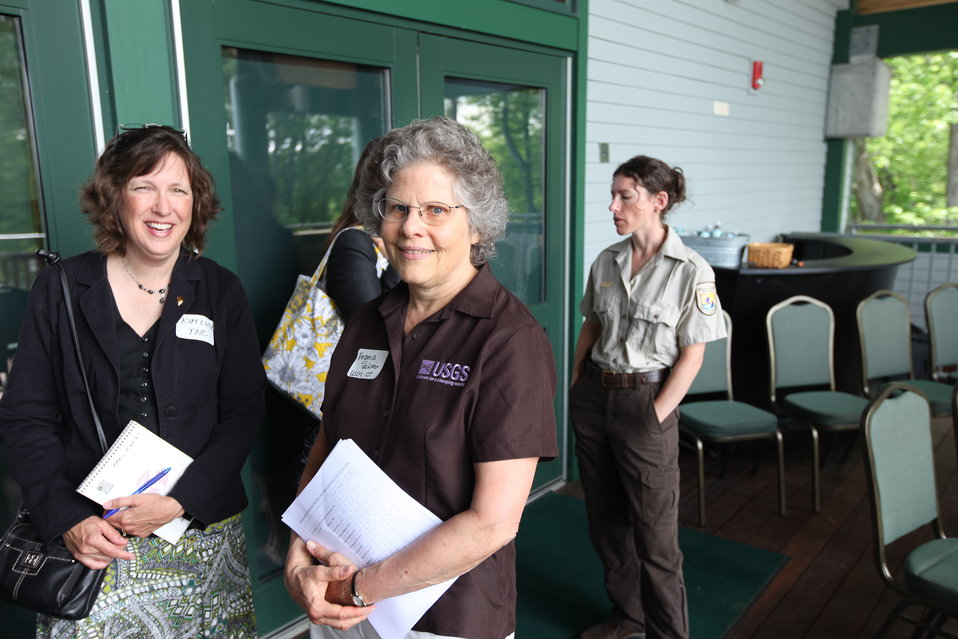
Conservation partners Kim Lutz from The Nature Conservancy and Virginia deLima from USGS.